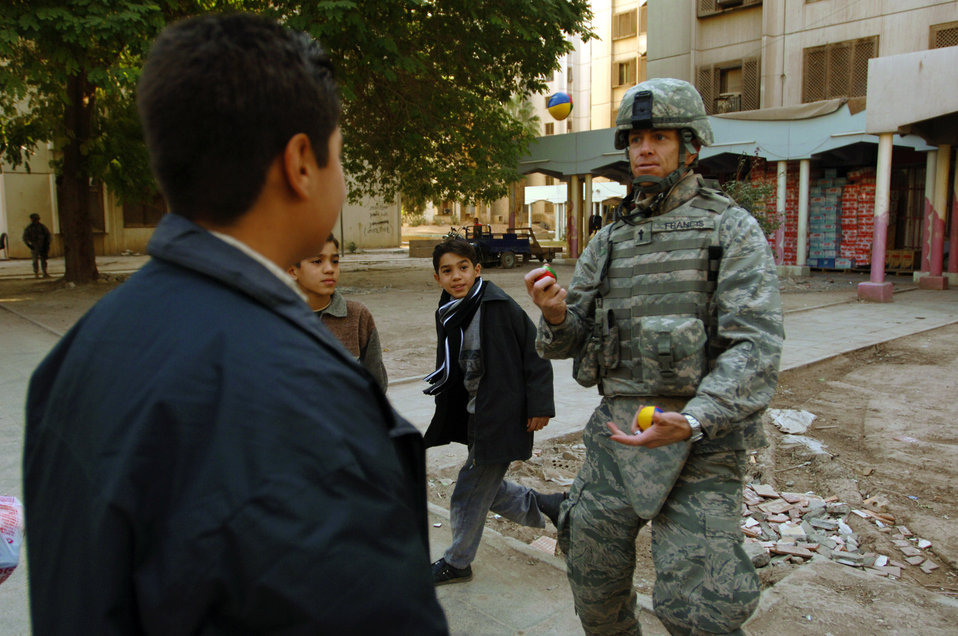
Airmen foster community relations in International Zone

Chaplain (Capt.) Kelvin Francis entertains Iraqi children by juggling balls while on foot patrol in a apartment complex Jan. 10 in the International Zone in Baghdad, Iraq. Chaplain Francis is assigned to the 732nd Air Expeditionary Group Religious Support Team and deployed from Shaw Air Force Base, S.C. He is a native of Jacksonville, Fla.